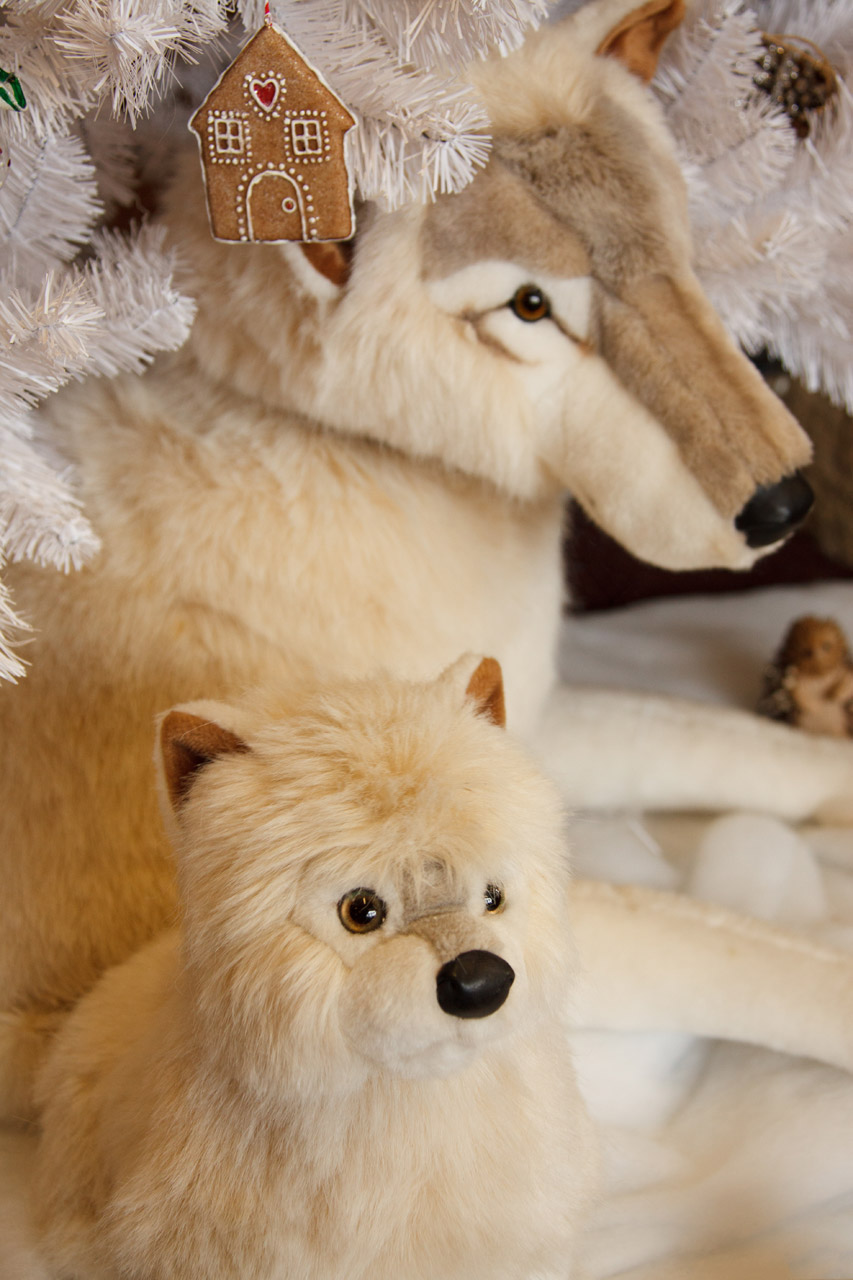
Polar wolf

Arctic wolf and its pup christmas decoration.